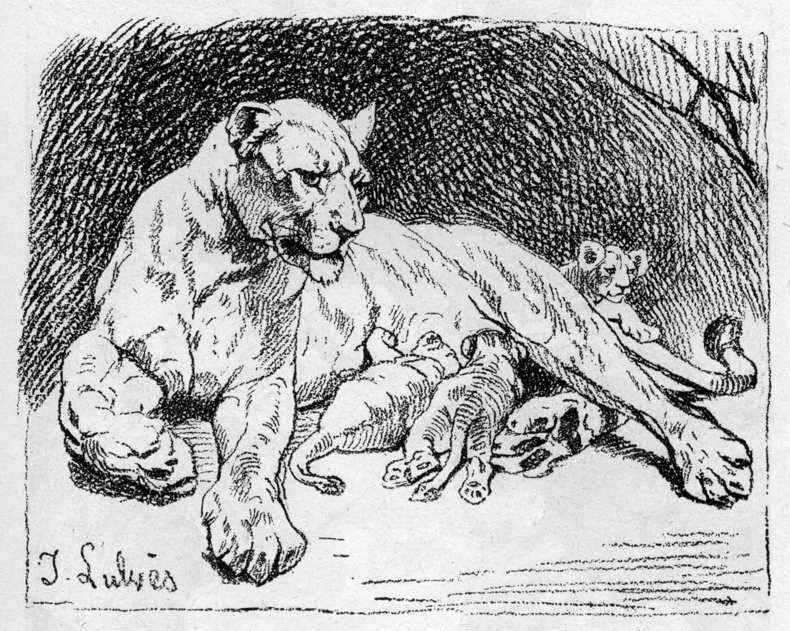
Löwin mit Jungen